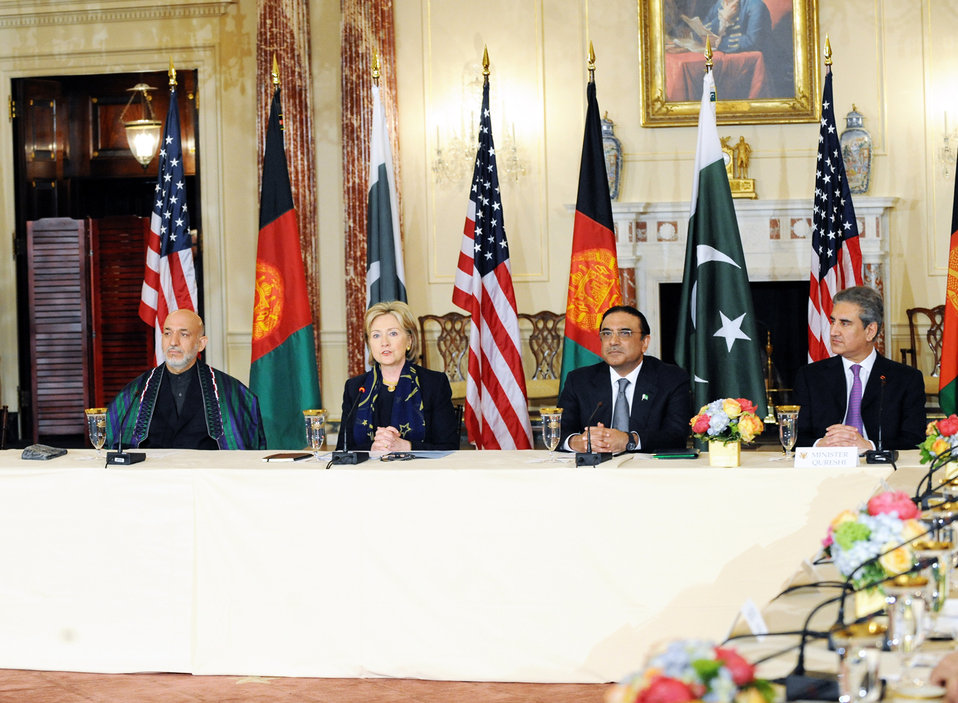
Trilateral Consultations With Afghanistan and Pakistan

U.S. Secretary of State Hillary Rodham Clinton provides remarks during talks with Afghan President Hamid Karzai and Pakistani President Asif Ali Zardari during trilateral consultations with Afghanistan and Pakistan at the U.S. Department of State in Washington, DC May 6, 2009.